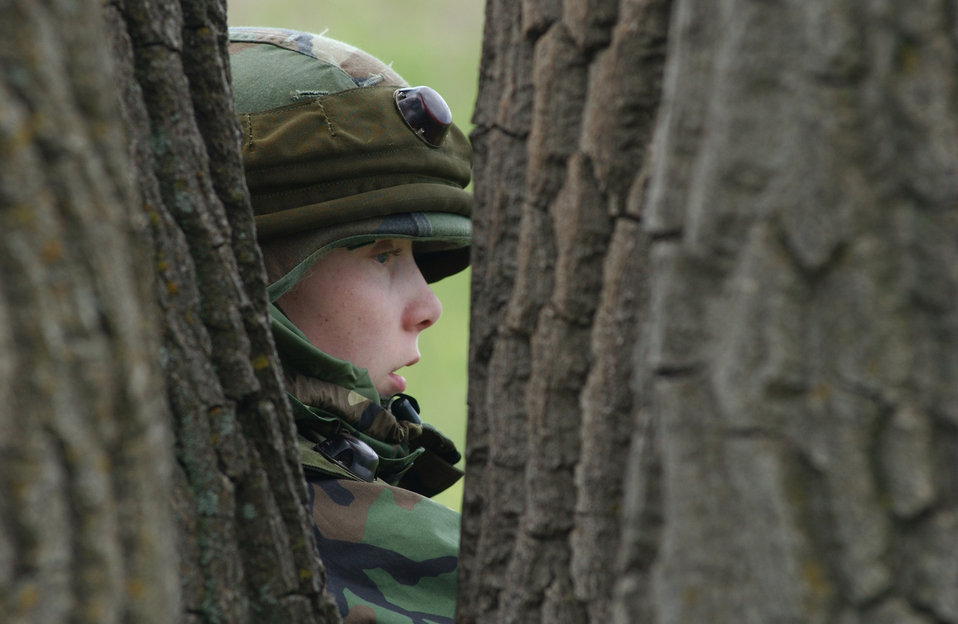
Hiding out

MALMSTROM AIR FORCE BASE, Mont. (AFPN) -- Senior Airman Amy Bennett finds cover behind a cottonwood tree while participating in an exercise to recapture a missile launch facility from simulated hostile forces here June 17. Airman Bennett is assigned to the 341st Security Forces Group. The group is responsible for protecting and securing Minuteman III missile facilities located throughout central Montana which belong to the base's 341st Space Wing.